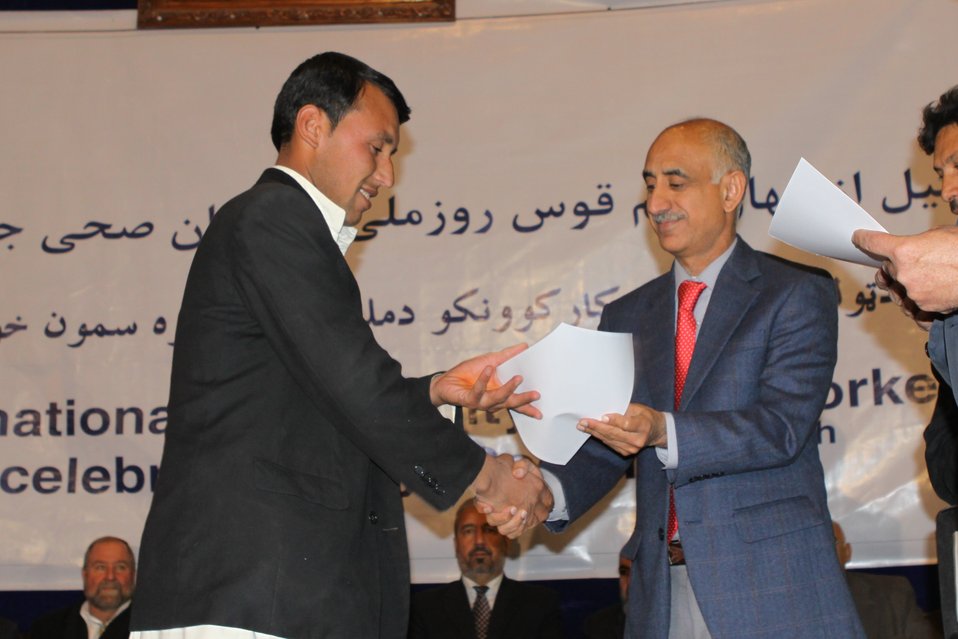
Community Health Workers Celebrated

Kabul, Afghanistan | December 5, 2010 — In support of the United Nations designated International Volunteer Day for Economic and Social Development, Afghanistan’s Ministry of Public Health celebrated its annual Community Health Worker Day today. Acting Minister of Public Health Dr. Suraya Dalil, USAID Senior Deputy Mission Director Robert Hellyer, other government officials, and international donors joined in recognizing the critical contribution of community health workers in Afghanistan and encouraging them to continue their voluntary support to their communities.
The event praised the contributions of the more than 22,000 volunteers throughout the country who deliver community level health-education, counseling, and services out of village health posts located in private homes. The Ministry of Public Health envisioned that community-based healthcare programs will actively encourage communities and families to adopt healthy lifestyles and behaviors, and provide families access to high quality and socially acceptable preventative medicine and life-saving services.
“We have 22,000 community health workers in Afghanistan that are able to implement the basic and standard medicines. They all have been trained through a job description,” said Minister Dalil. Addressing the health workers, she added, “I am proud and feel powerful that I have people like you.”
USAID-funded health projects collaborate closely with the Ministry of Public Health to improve the health and nutritional status of Afghans, provide quality primary healthcare, and promote healthy behaviors at the community and household-levels. USAID supported the training of more than 9,000 of the volunteer community health workers currently working in Afghanistan.
“On behalf of the American people, I congratulate the Community Health Workers for their diligence to gain the skills and knowledge necessary to serve their communities in this important role,” said USAID Senior Deputy Mission Director Hellyer. “USAID strongly supports community based health care and believes that quality community-based health services are essential to reaching Afghanistan’s Millennium Development Goals.”
To support the Basic Package of Health Services, USAID assisted in developing the community health worker training manual, helped train community health worker supervisors and master-trainers, facilitated in-service training, and produced and developed reporting tools, job aids, and education materials.